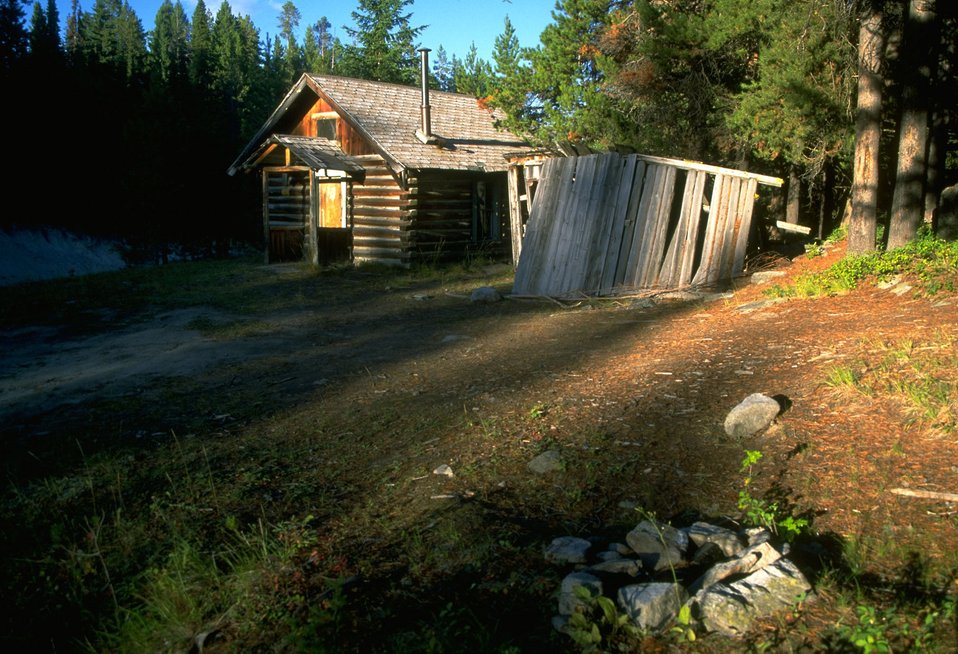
Garnet Back Country Byway--old fire warden's cabin along the roadside